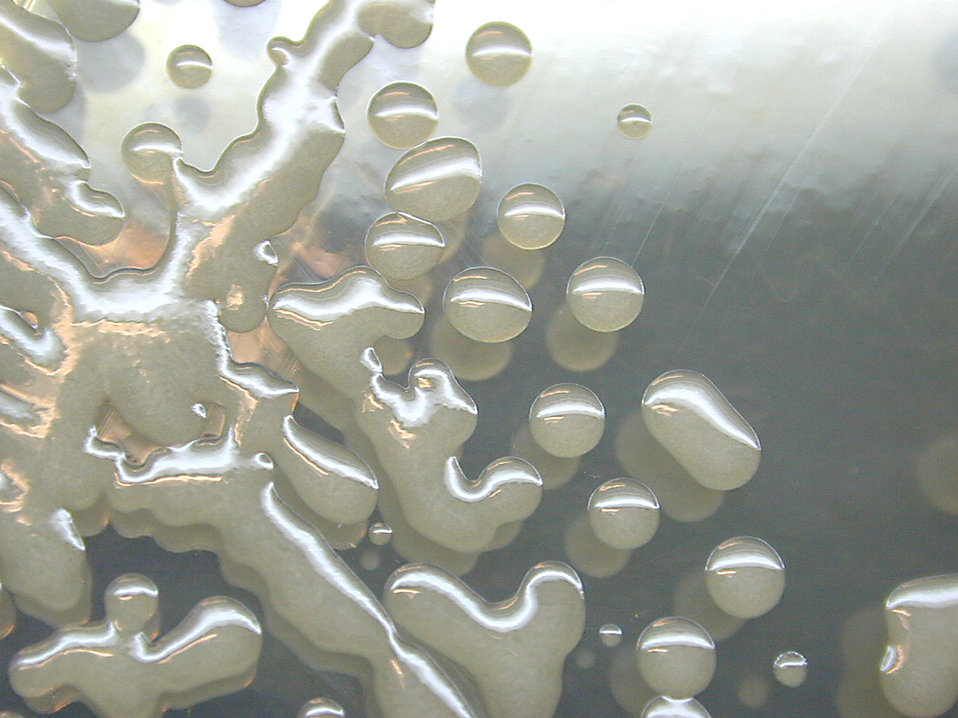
Bacillus anthracis capsule production on bicarbonate agar medium.